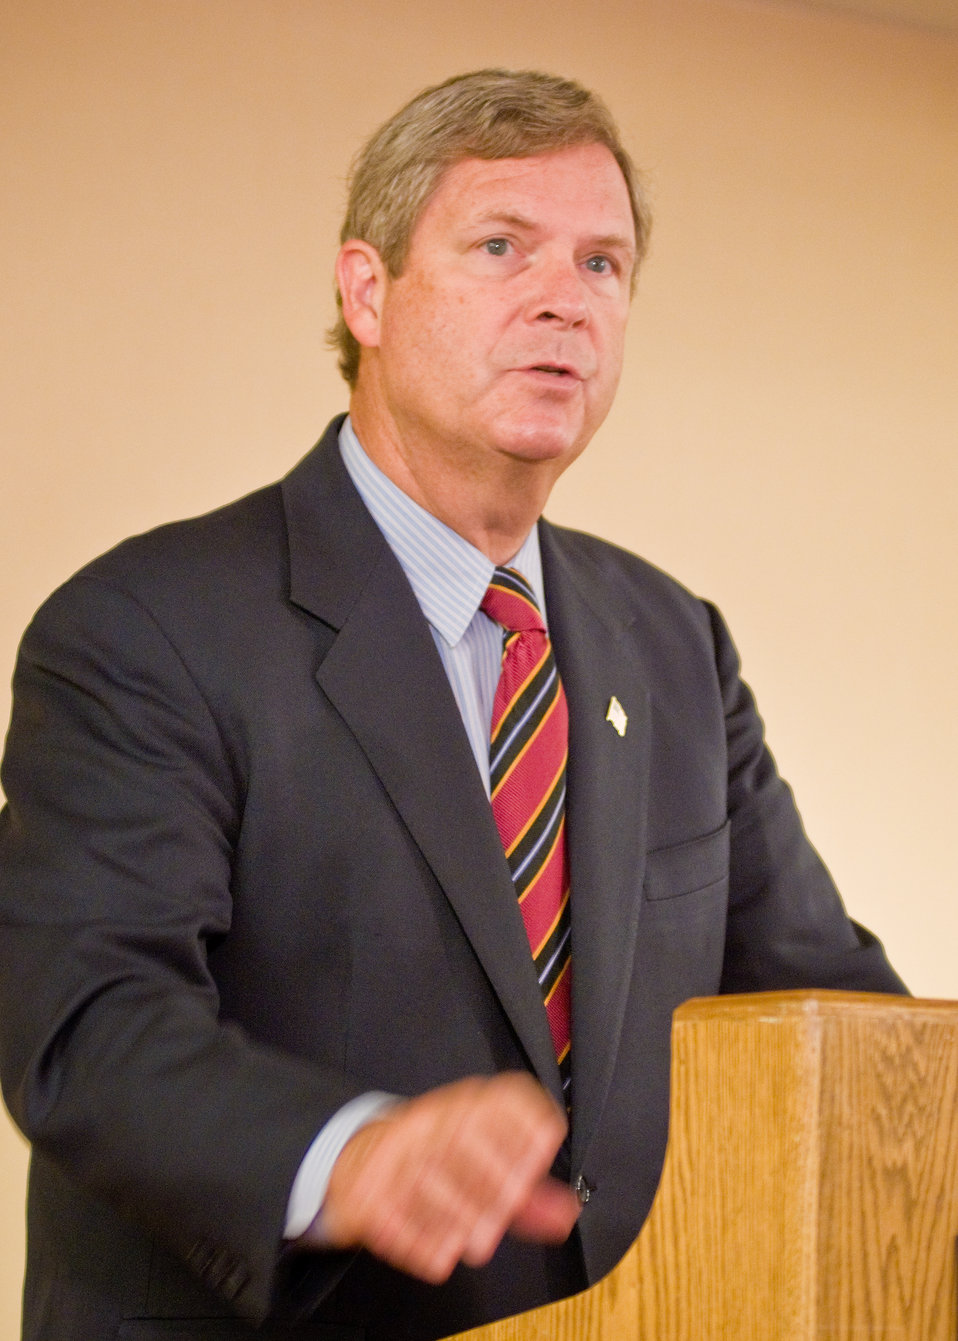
Agriculture Secretary Tom Vilsack speaks to Food Safety Inspection Service employees at the 2010 FSIS Diversity Training Conference in Arlington, Virginia, Tuesday, August 31, 2010. The theme of the conference is 'Diversity in Thought, Unity in Purpose.' The reason for the conference is to improve civil rights for clients and employees. USDA Photo 10di1475-71 by Bob Nichols,